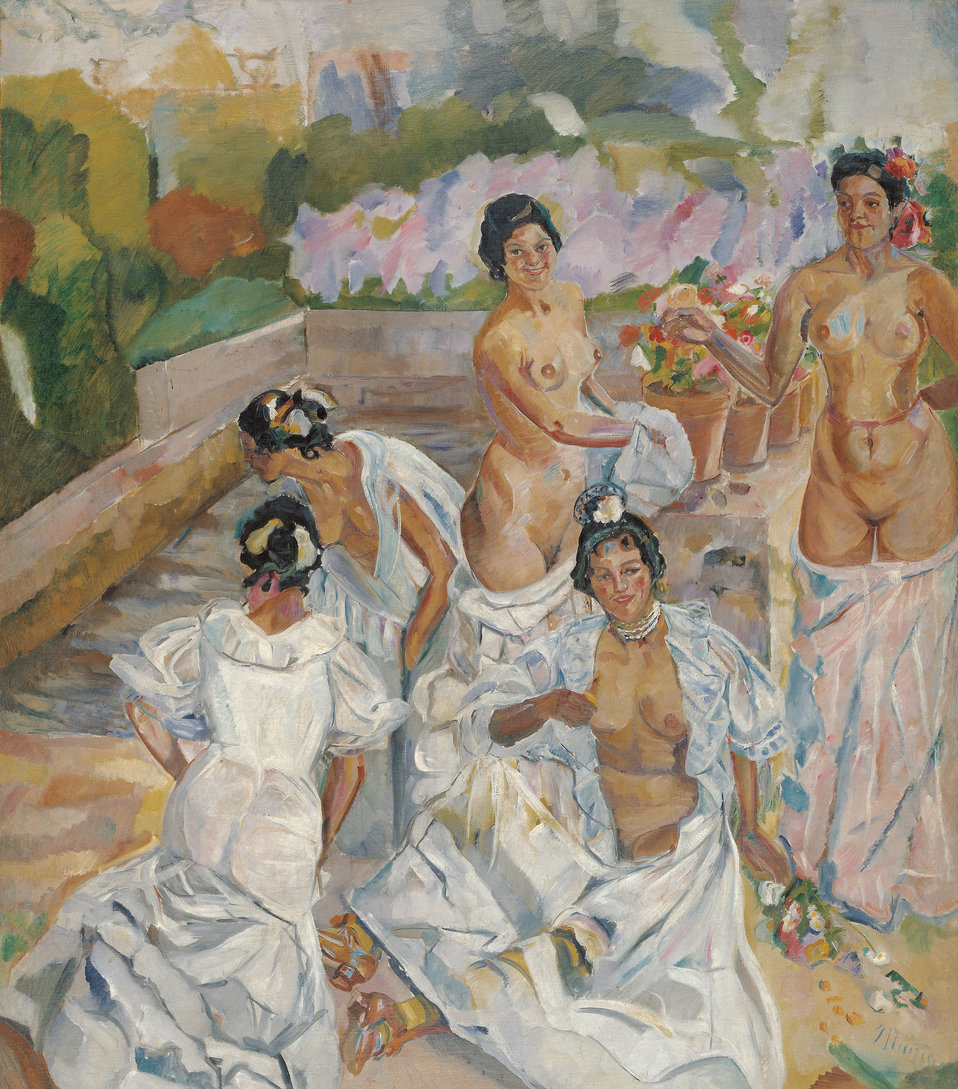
Francisco Iturrino The Bath (Seville) Oil on canvas, 200 x 174 cm, Inv. CTB.1996.50 Museo Carmen Thyssen Native name Museo Carmen Thyssen Location Málaga, Spain Coordinates 36° 43′ 17″ N, 4° 25′ 22″ W Established 2011 Website www.carmenthyssenmalaga.org